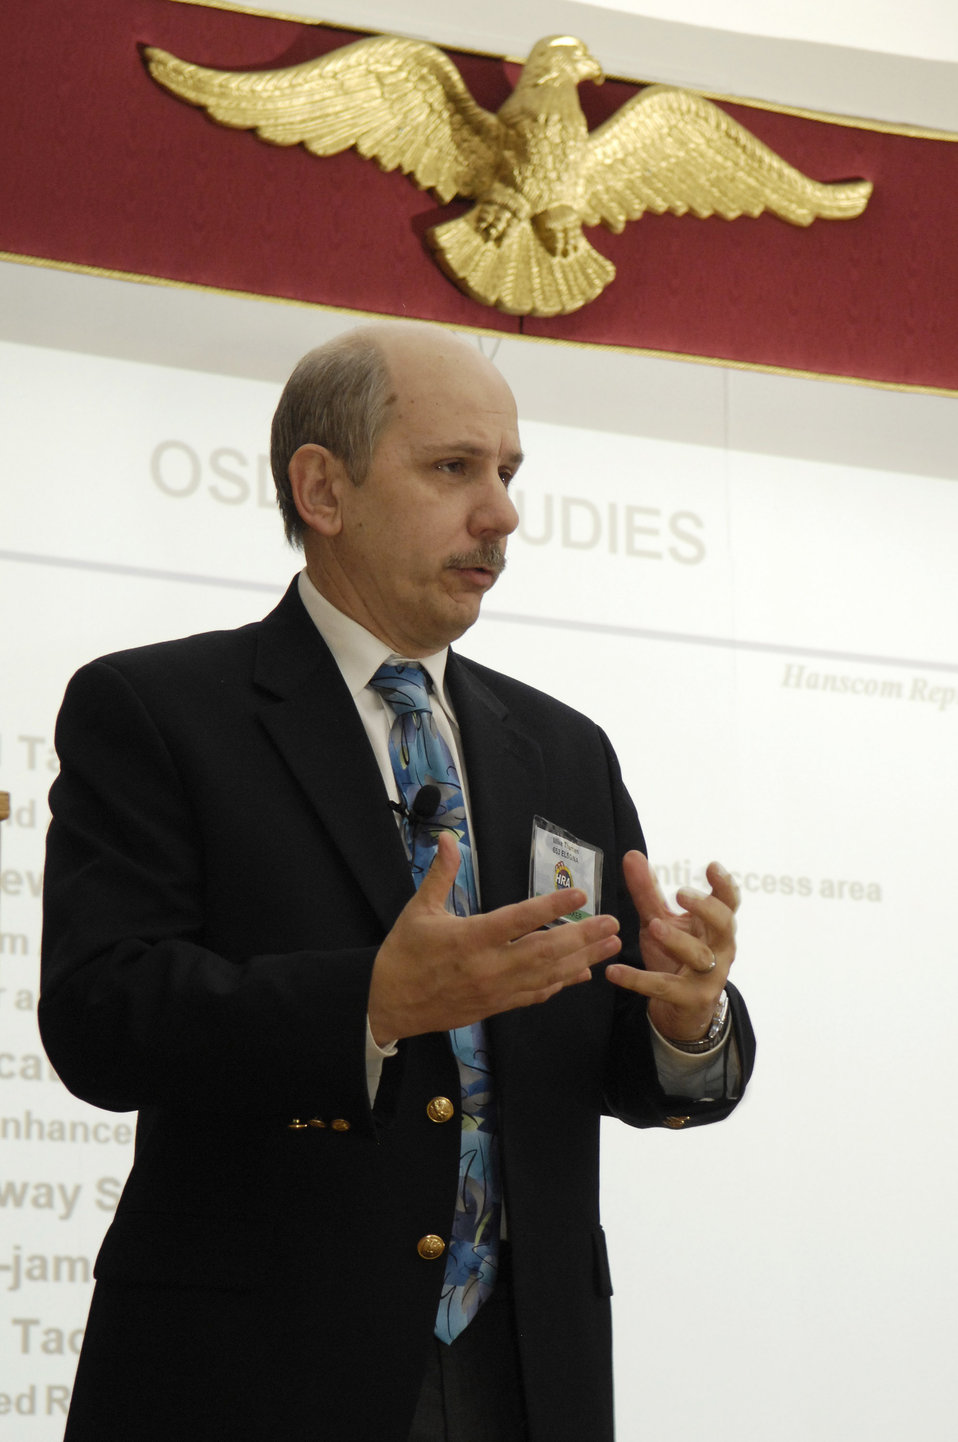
Airborne networking team works to meet challenges

Mike Therrien addresses the Hanscom Representatives Association Feb. 12 in the Hanscom Minuteman Club at Hanscom Air Force Base, Mass. Mr. Therrien discussed airborne networking plans and challenges and then fielded questions from members. Mr. Therrien is chief of the Airborne Networking division with the 653rd Electronic Systems Group.